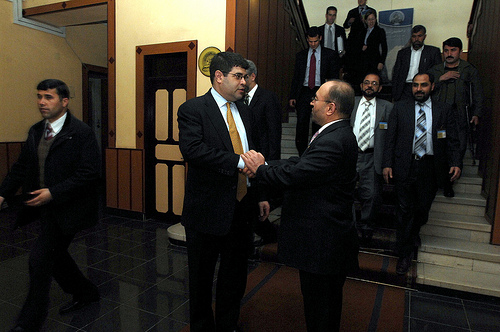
Deputy Secretary Wolin and Afghanistan's Central Bank Governor Fitrat on February 10.